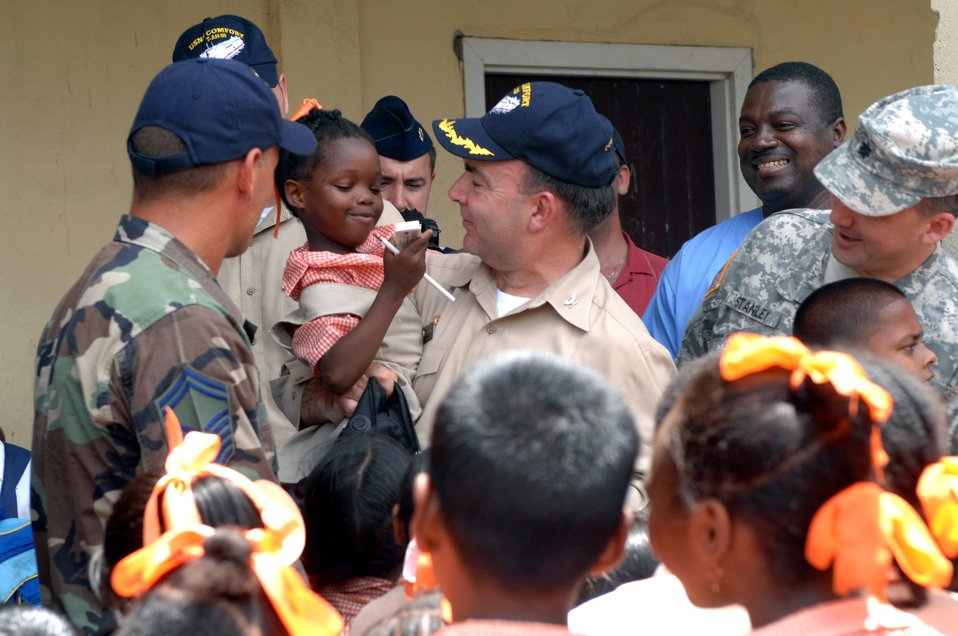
A helping hand

Airmen and Sailors from the hospital ship USNS Comfort visit with students Sept. 26 at the Grove Primary School in East Bank Demerara, Guyana. The ship is on a four-month humanitarian deployment to Latin America and the Caribbean providing medical treatment to patients in a dozen countries.